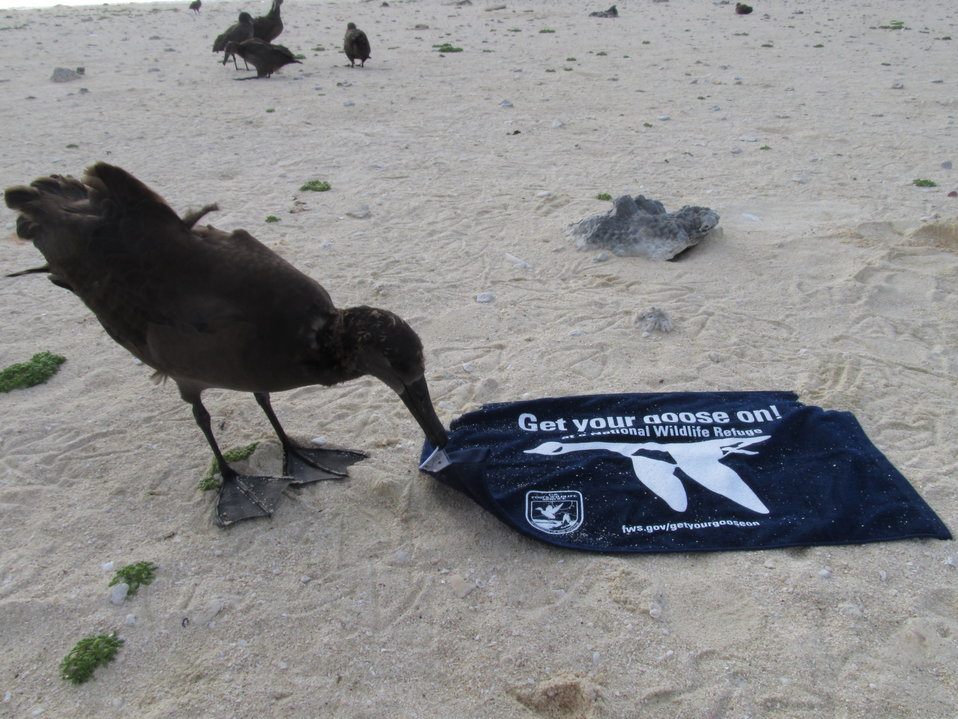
Get Your Goose On! - Albatross Style

Photo taken at Laysan Island in the Papahanaumokuakea Marine National Monument, Hawaiian Islands National Wildlife Refuge. Laysan is located approximately 800 miles northwest of Honolulu, Hawaii and is a remote field camp staffed year round for habitat restoration and population monitoring.